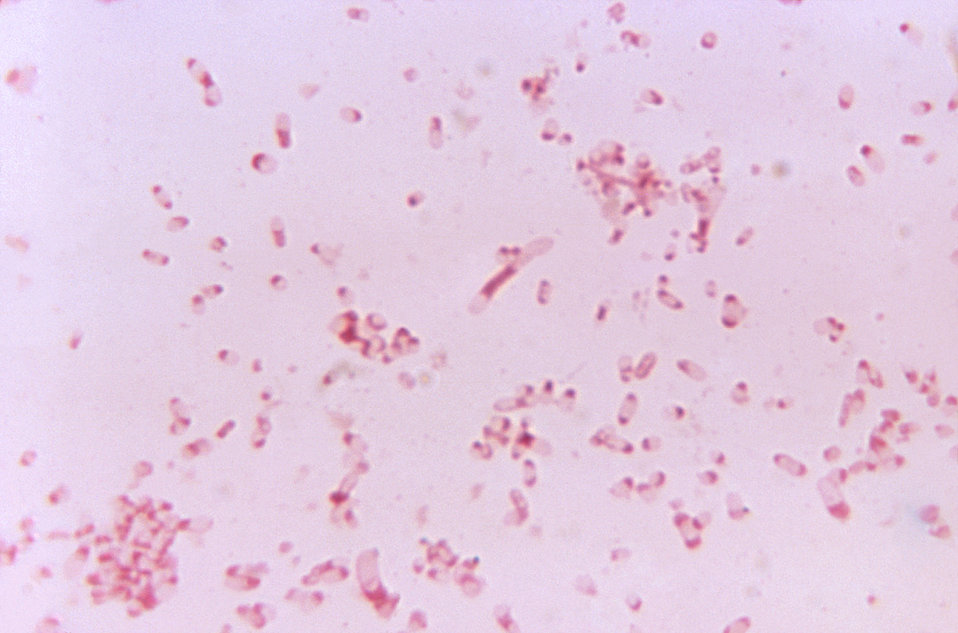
This photomicrograph shows the bacterium Bacteroides fragilis subsp. thetaiotaomicron cultured in a thioglycollate medium for 48 hours.